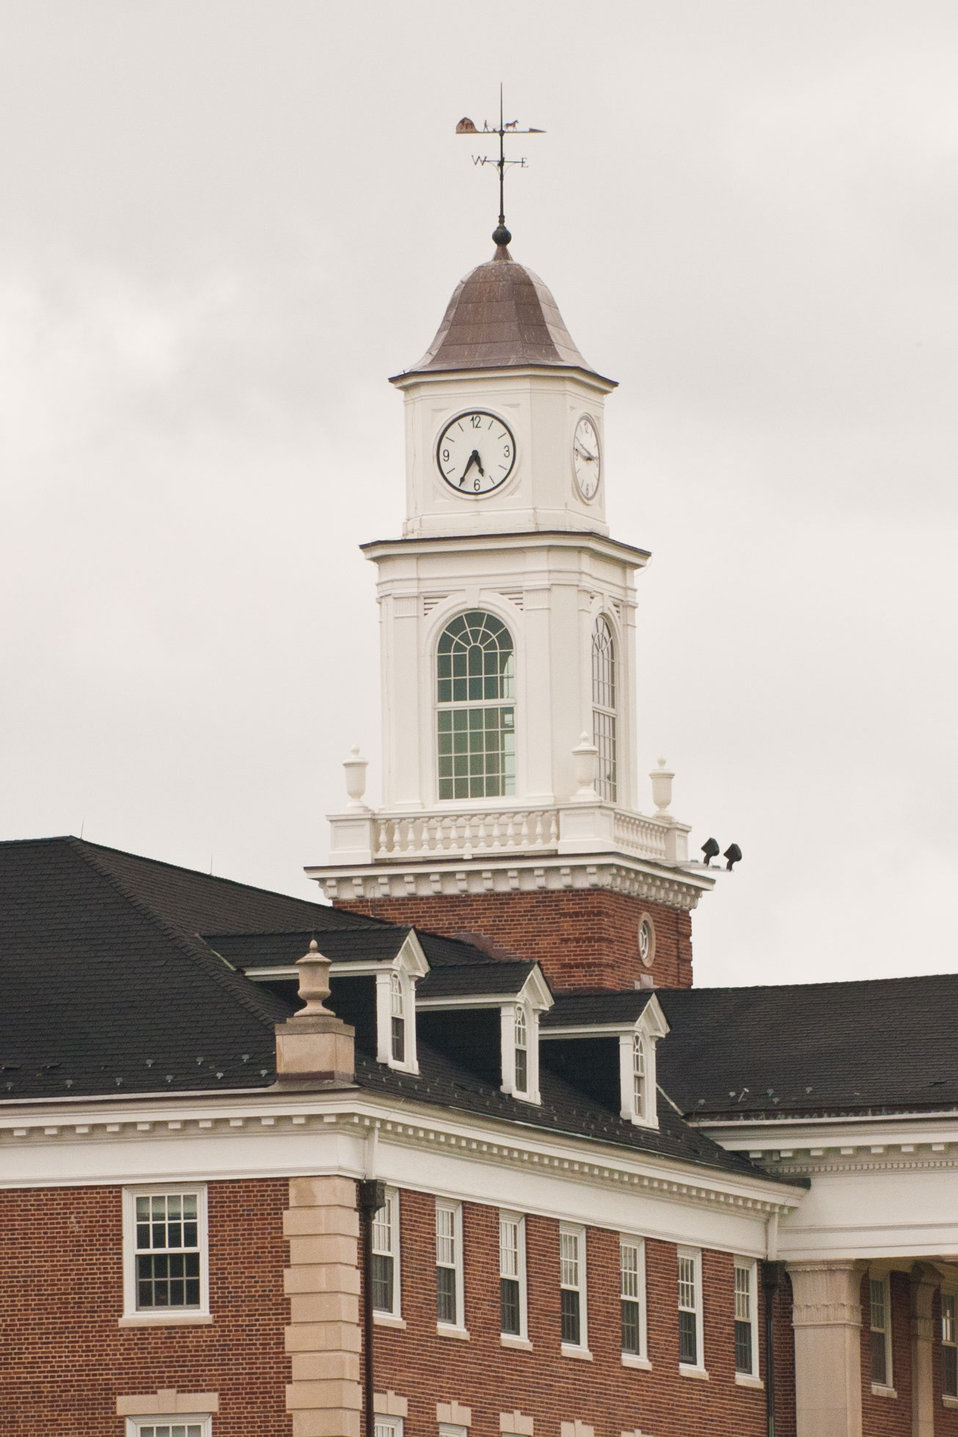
United States Department of Agriculture (USDA), Henry A. Wallace Beltsville Agricultural Research Center's clock tower is a prominent feature atop building 003, in Beltsville, MD, on Wednesday, September 21, 2011.